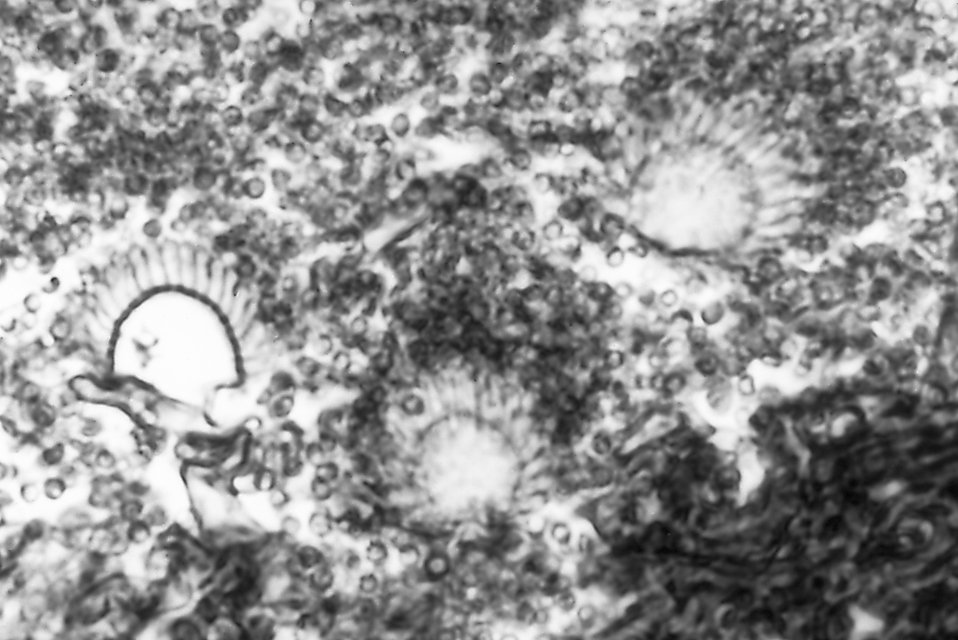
This was a case of pulmonary aspergillosis in a caged sulfur-crested cockatoo due to Aspergillosis fumigatus.